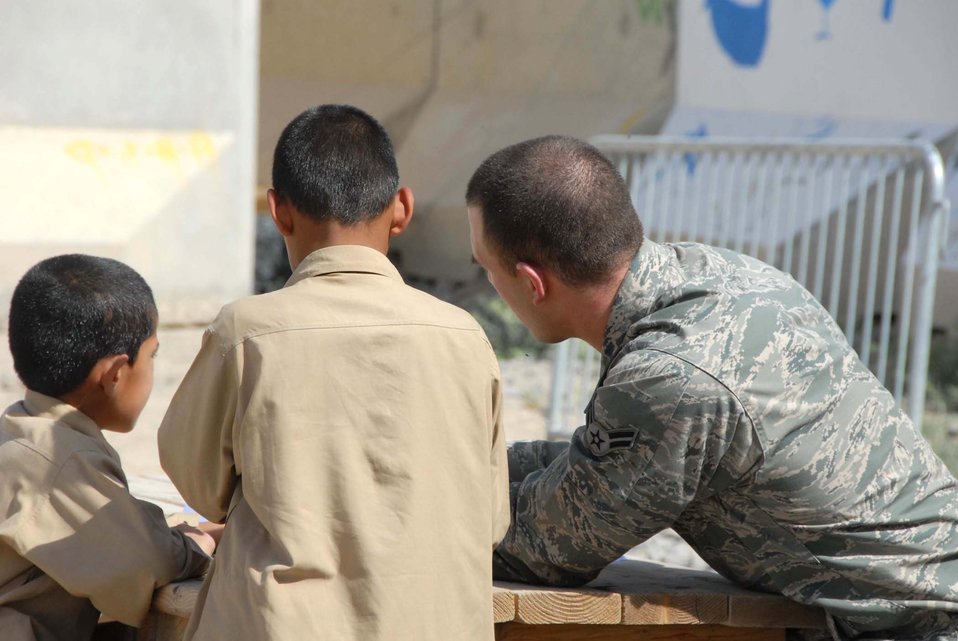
Airman build paper airplanes and relationships

Airman 1st Class Garrett Lee shows Afghan boys how to fold a paper airplane at a school April 30, 2011, at Kandahar Airfield. Airman Lee was part of a group that volunteered to participate in activities for the day, such as building the paper airplanes and playing soccer. Airman Lee works is assigned to the 451st Air Expeditionary Wing command post at Kandahar Airfield.